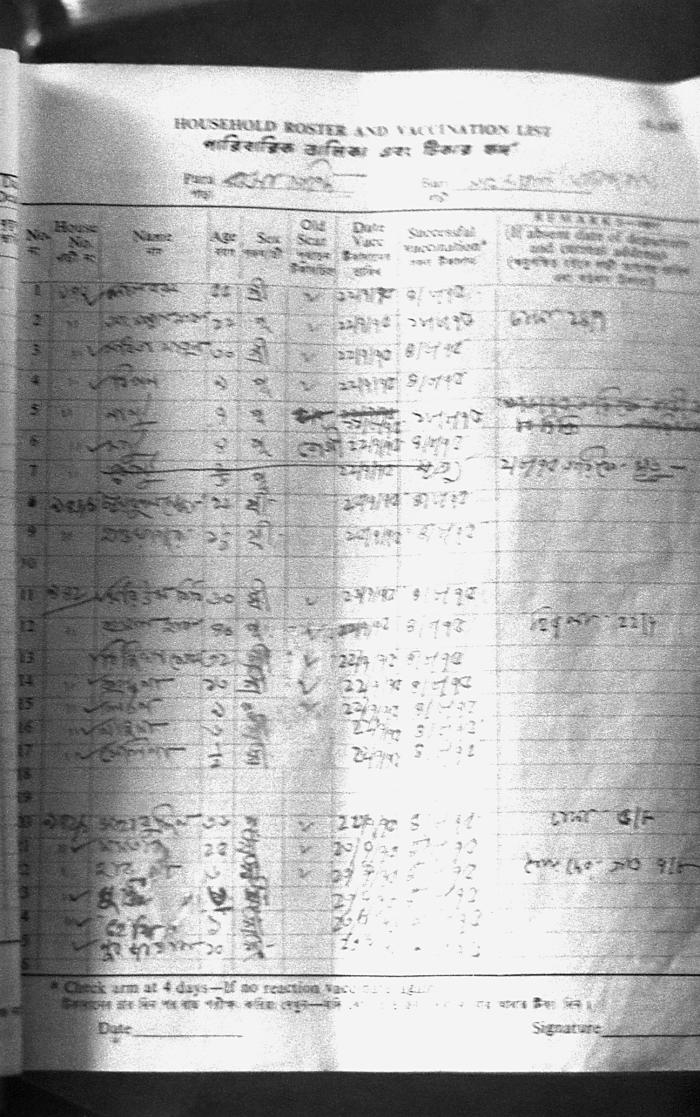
This was a detailed view of a 'Containment Book' page listing data pertaining to those community homes that had been visited, and the finds uncovered. This book recorded all of the names of anyone living in, or near an infected home, and subsequently all those listed were vaccinated against smallpox. Those vaccinated were followed until a 'successful' vaccination was observed.